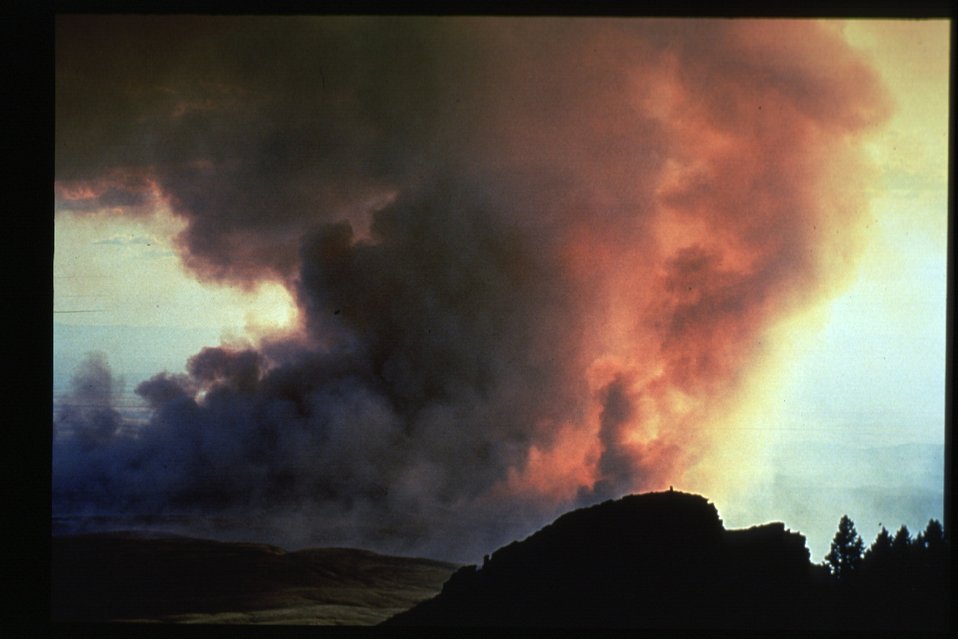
Boise Foothills Fire Danskin Mountains and South Fork of Boise River Smoke Four River Field Office LSRD Lower Snake River District